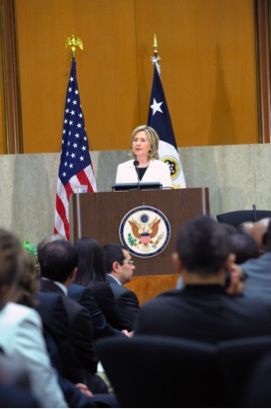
Secretary Clinton Delivers Remarks at Pride Month Celebration

U.S. Secretary of State Hillary Rodham Clinton delivers remarks at an event celebrating LGBT Pride Month at the U.S. Department of State in Washington, D.C., on June 22, 2010.